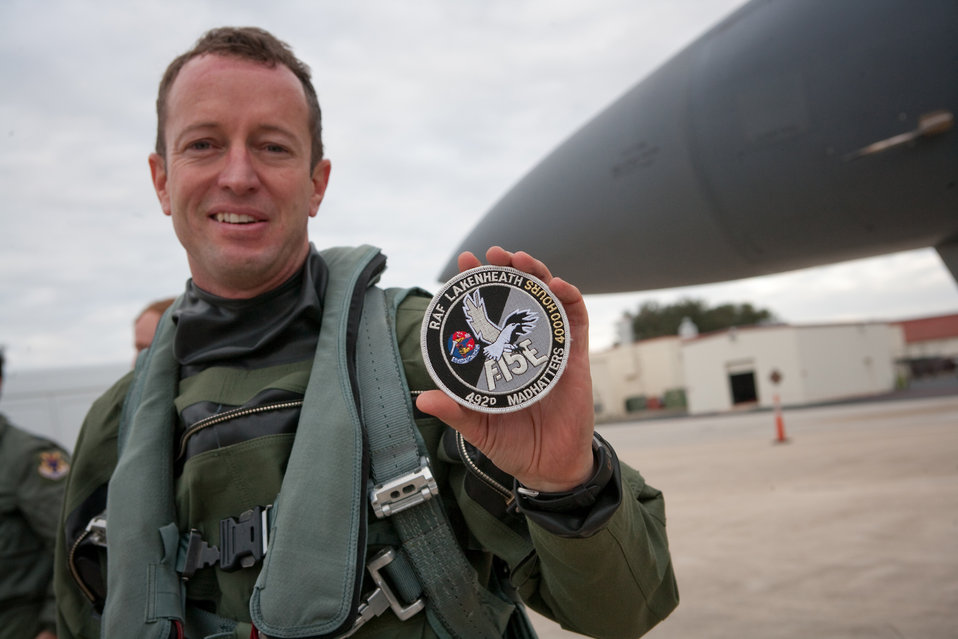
F-15E pilot strikes 4,000 hours

Seventeen years in the making, Lt. Col. David Iverson holds the 4,000 hours patch he can now wear after a 10.1 hour flight in an F-15E Strike Eagle from Royal Air Force Lakenheath, England, to Lackland Air Force Base, Texas, Jan. 11, 2010.